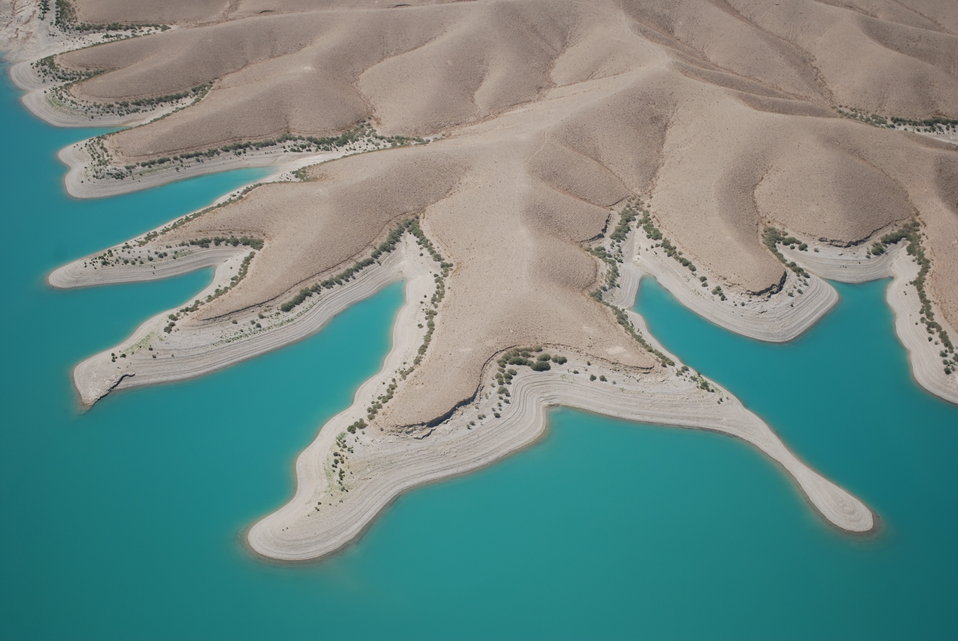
'On the Road' in Kandahar